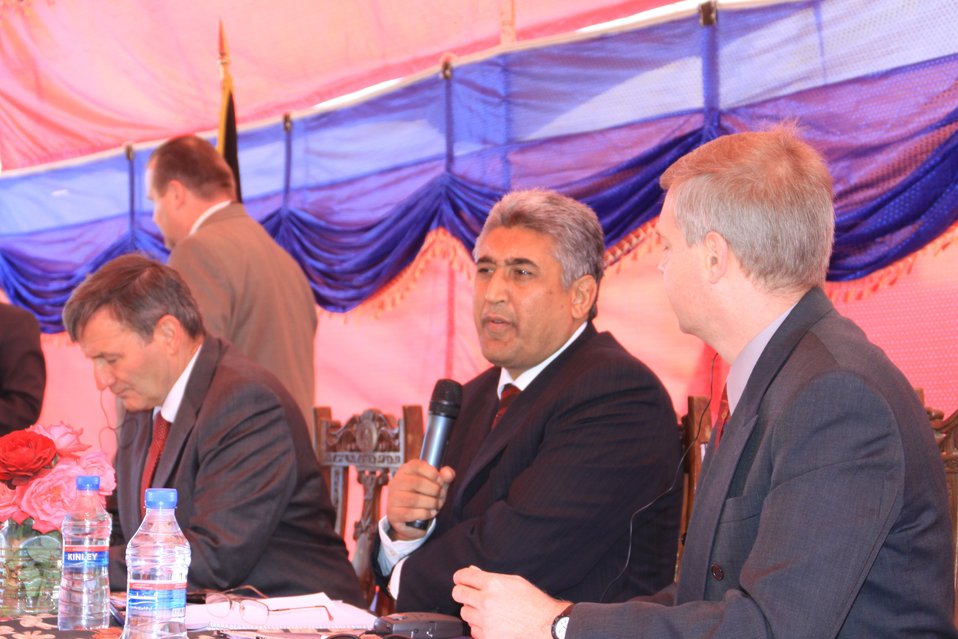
AVIPA Plus Wheat Seed Distribution 101005

US Ambassador Karl Eikenberry and USAID Acting Mission Director Kevin Brownawell joined the Minister of Agriculture, Irrigation and Livestock, H.E. Minister Mohammed Rahimi in signing a Memorandum of Understanding and distributing vouchers to area farmers for wheat and fertilizer.